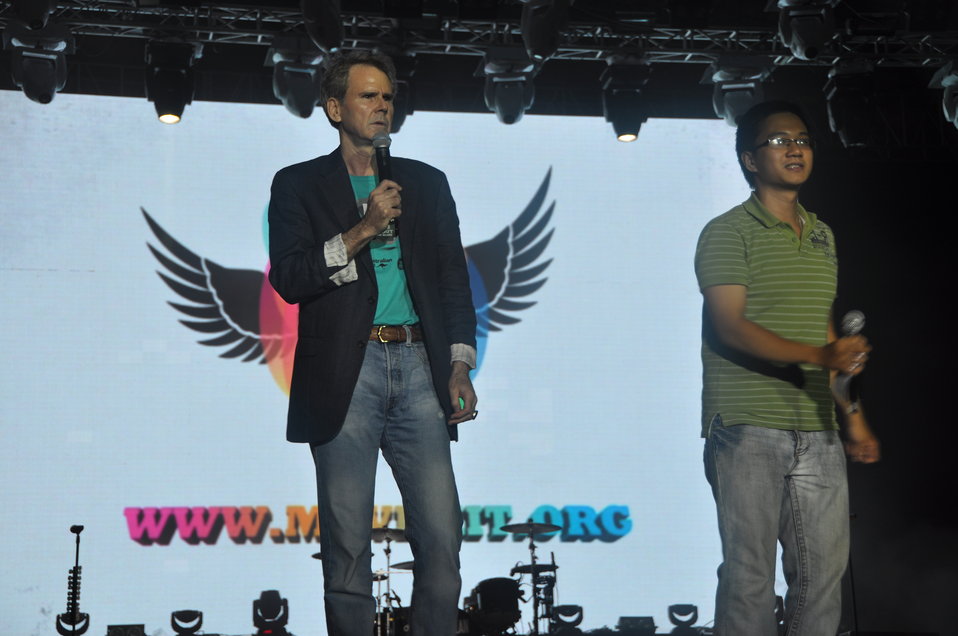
U.S. Ambassador to ASEAN, David L. Carden, challenges youth to 'stay angry and stay young' by fighting human trafficking

USAID co-sponsors MTV EXIT concert, campaign against human trafficking